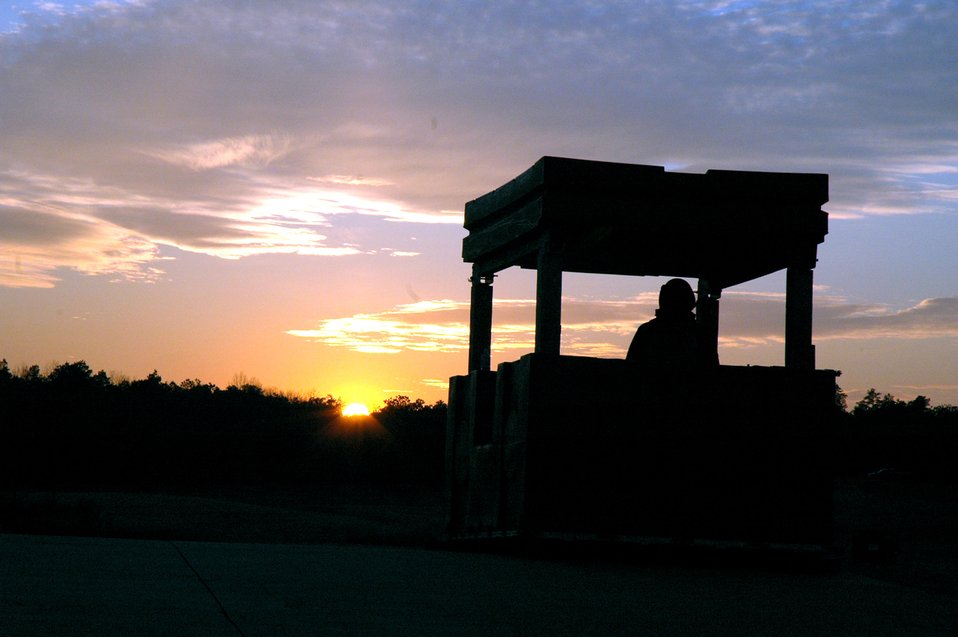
Eagle Flag

Senior Airman Nicoy Thompson, deployed with the 421st Air Expeditionary Group, watches over perimeter security during operations for Eagle Flag Feb. 11 at the Naval Air Engineering Station in Lakehurst, N.J. The exercise, operated by the Air Mobility Warfare Center's 421st Combat Training Squadron, is set up to test more than 400 Airmen on expeditionary combat support skills. Airman Thomas is with the 60th Civil Engineer Squadron at Travis Air Force Base, Calif.